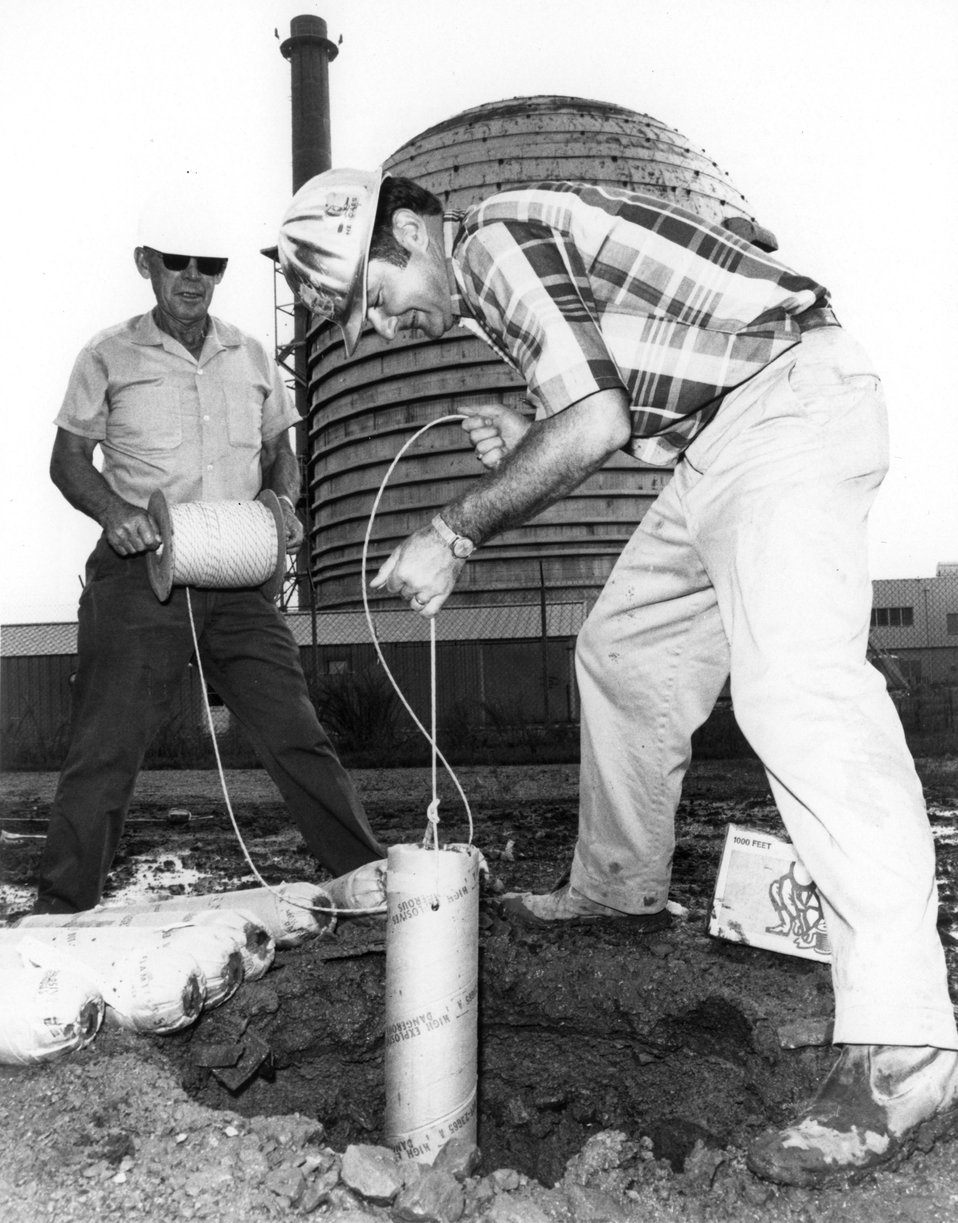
Dynamite charges were detonated near a non-operating, experimental nuclear reactor in Oak Ridge, Tenn., as part of tests to increase scientific and engineering knowledge of the safe and economic design of nuclear power plants located in regions of seismic activity. c. 1971